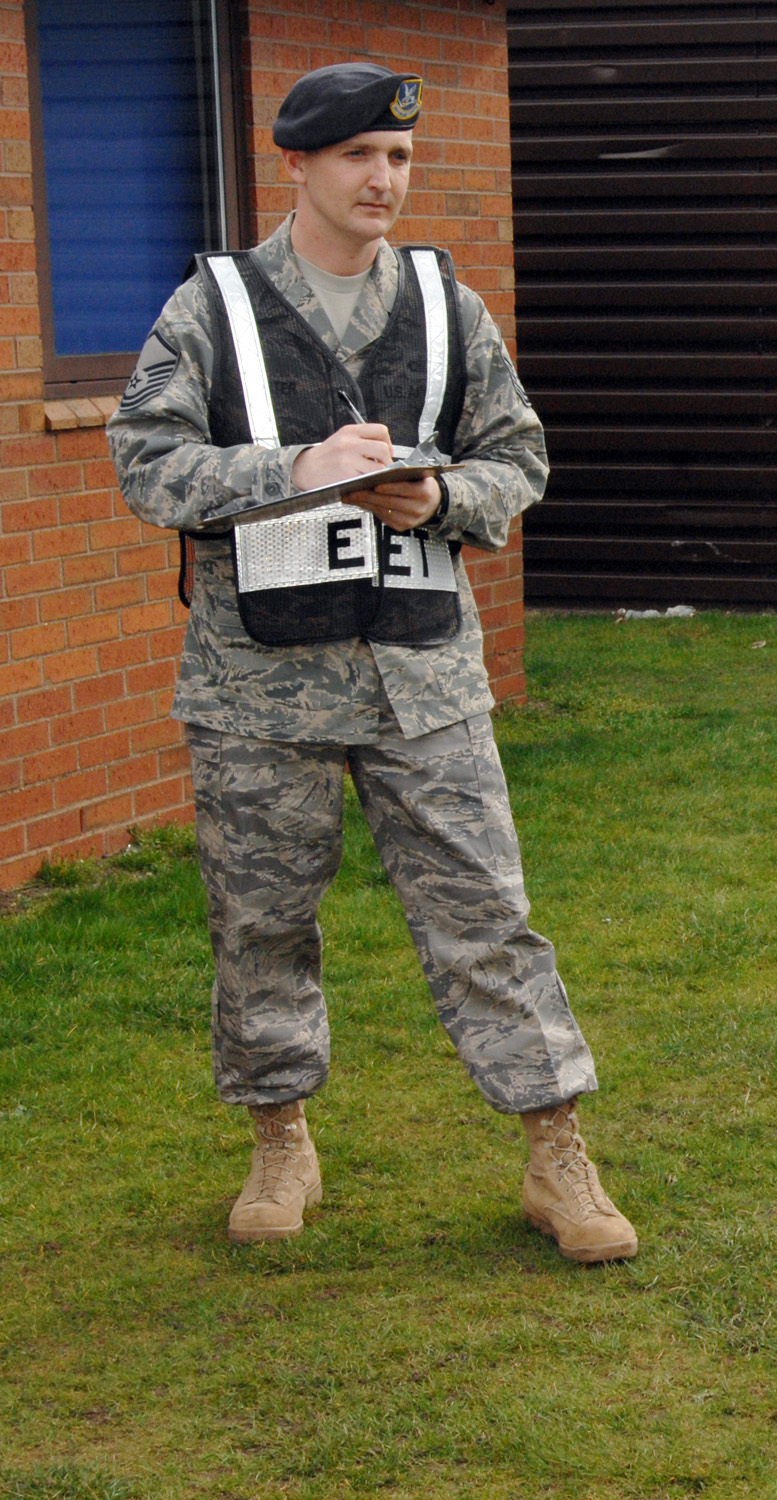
12 Outstanding Airmen of the Year named

Master Sgt. John Carter, the noncommissioned officer in charge of the 100th Security Forces Squadron's Standards and Evaluations division at RAF Mildenhall, England, was deployed to Baghdad where he led raids, survived 270 rocket attacks and directed some 6,000 foot or mounted patrols. The Air Force Chief of Staff reviews the selections. The selections for the 2009 12 Outstanding Airmen of the Year were announced July 2 by Air Force officials at Randolph Air Force Base, Texas.